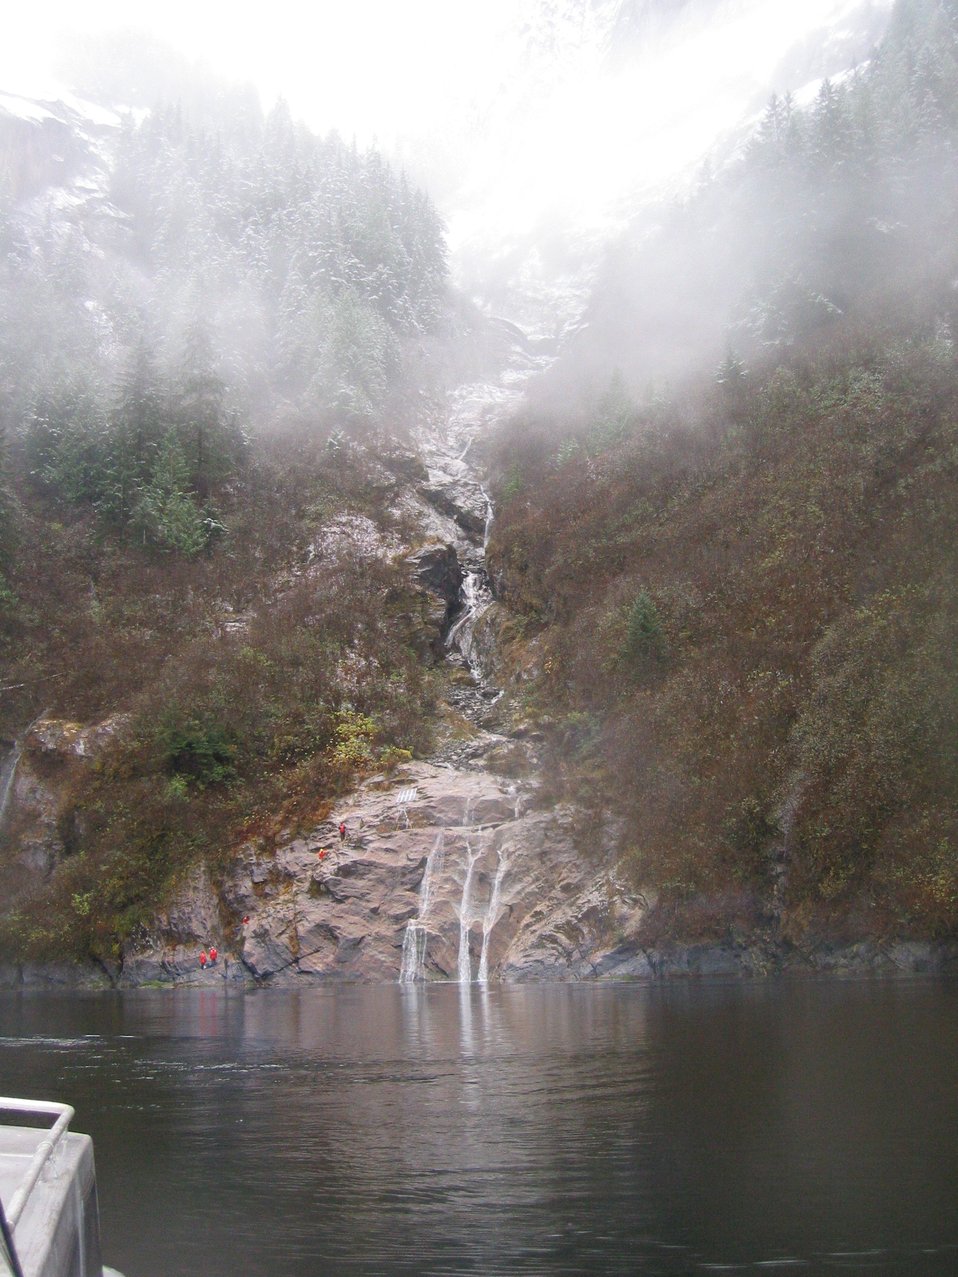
Fly-away setup.